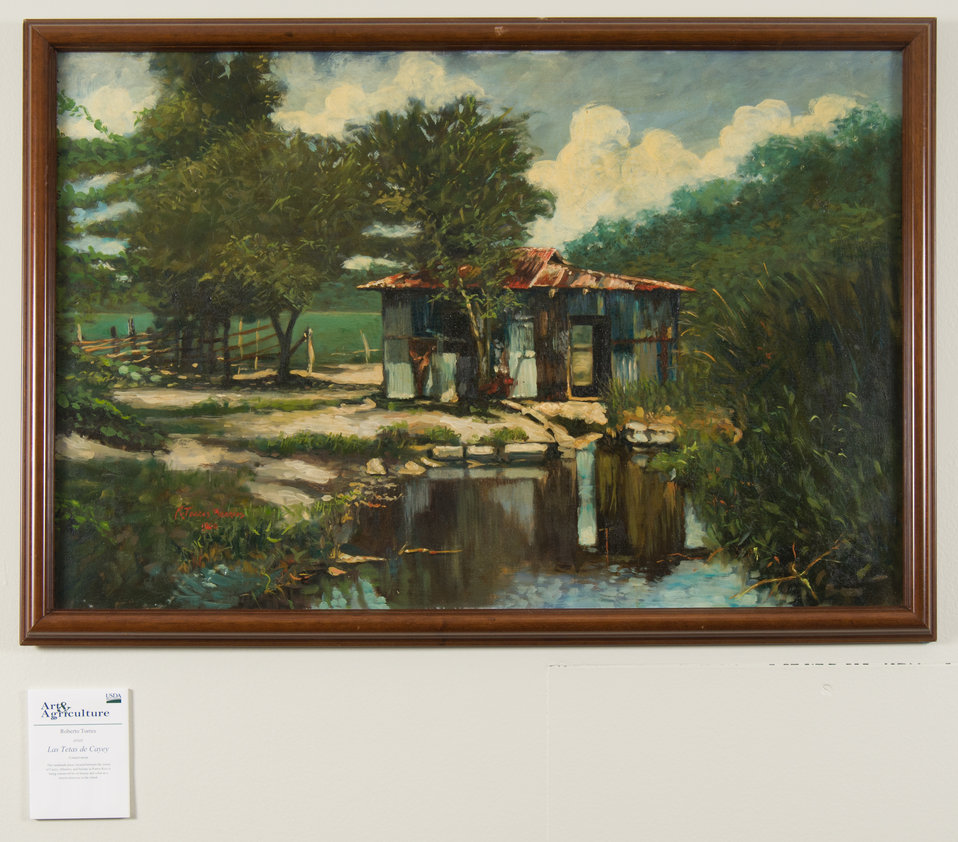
Online Viewer's Choice entries of the 2013 Art & Agriculture, Tuesday, July 9, 2013, in the South Building, Washington, D.C. Themes were expressed by employees from across the department and the contest was open to full-time and part-time USDA employees. Winning artwork will be displayed till the end of the year. U.S. Artistic expression is a creative outlet that is vital for an individual to grow and develop.